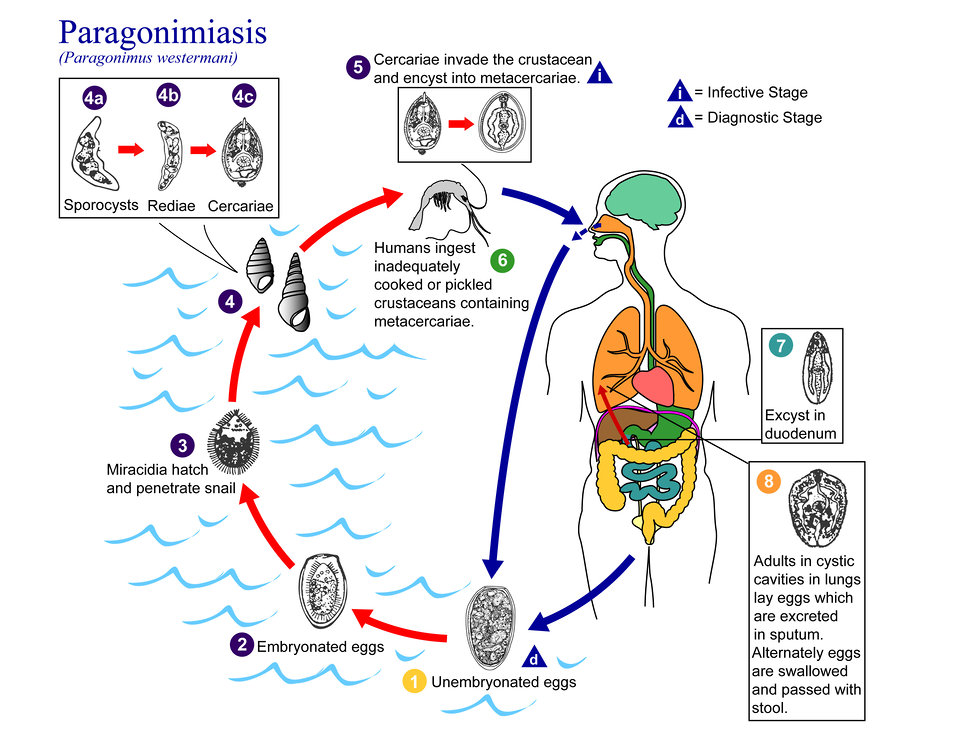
This is an illustration of the life cycle of Paragonimus westermani, one of the causal agents of Paragonimiasis.